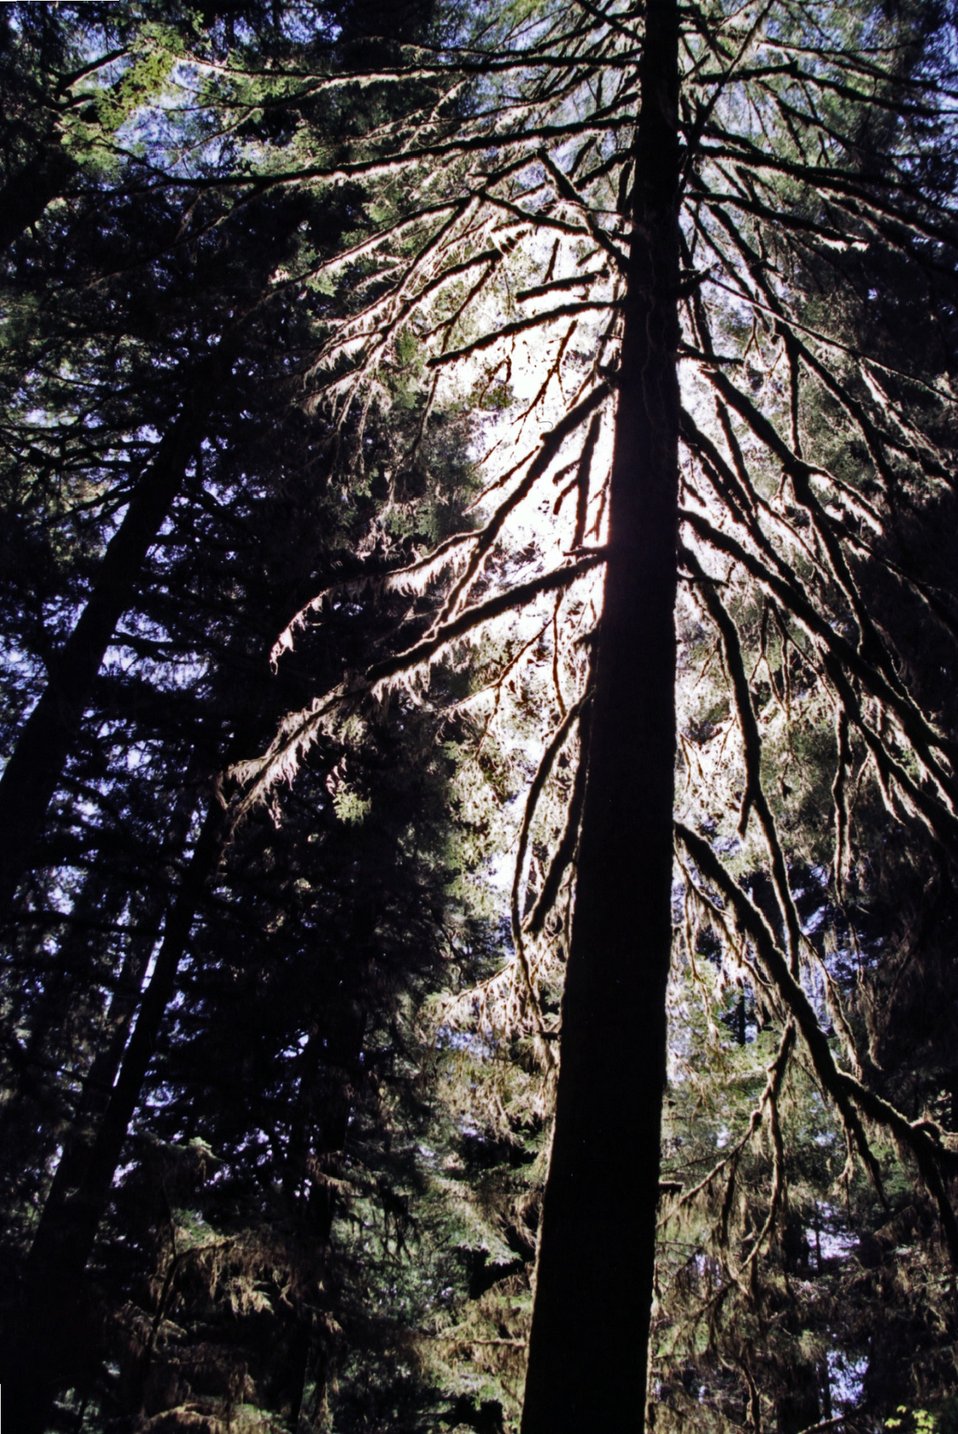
Valley of the Giants, Siletz Watershed. James Siebert, State Office Art3